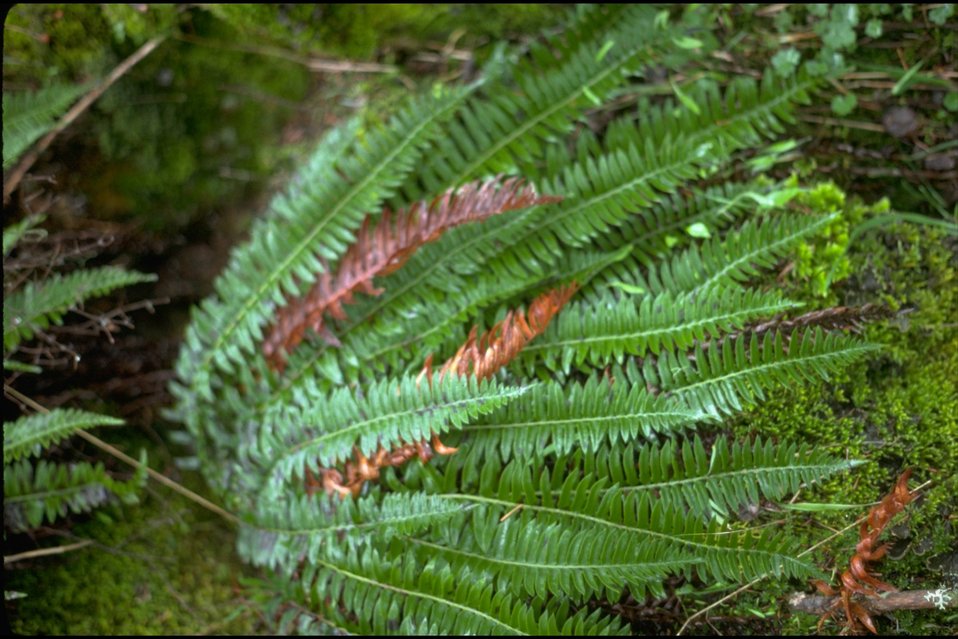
Rogue River, above Sterling Mine Ditch - Sword Fern.